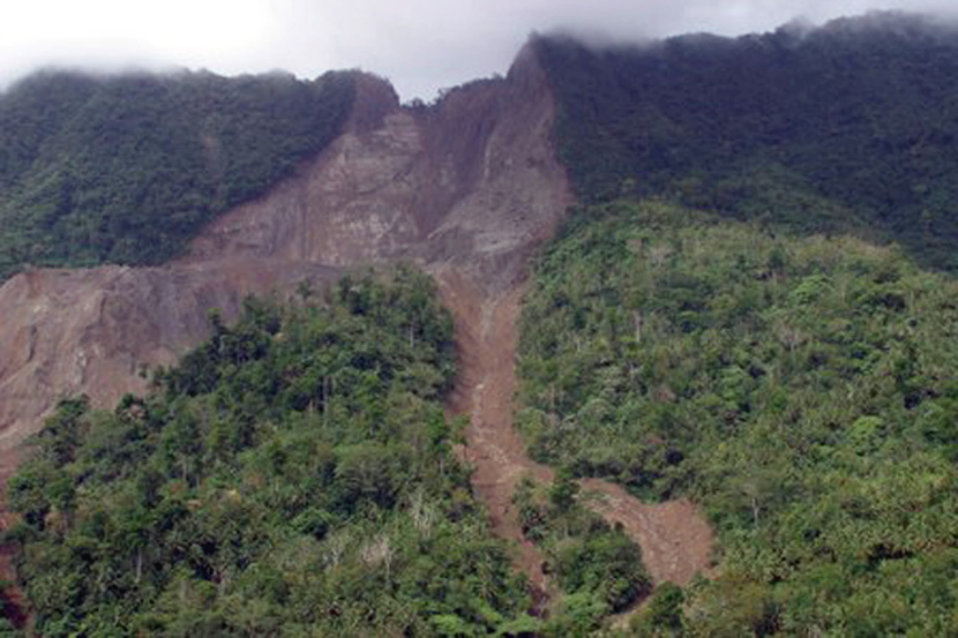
Philippine landslide relief

LEYTE, Philippines (AFPN) -- A landslide destroys the countryside in Leyte, Philippines. More than 2,000 Armed Forces of the Philippines and U.S. Forces with Joint Task Force Balikatan 2006 are conducting humanitarian relief efforts following the devastating Feb. 17 landslide in the village of Guinsaugon on the island of Leyte.